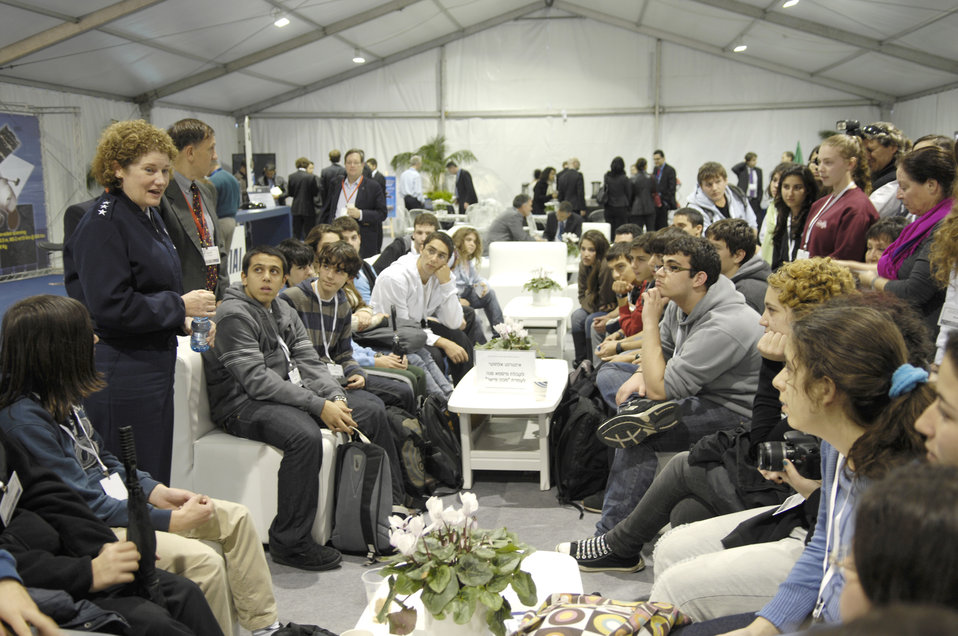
JFCC-Space commander highlights need for improved space situational awareness

Lt. Gen. Susan Helms speaks with students at the Sixth Annual Ilan Ramon International Space Conference in Tel-Aviv, Israel, Jan. 30, 2011. The students used this opportunity to ask the general questions about her assignment as an astronaut with NASA. During her two-day visit to Tel-Aviv, General Helms delivered a keynote speech at the conference and met with Israeli military leaders. General Helms is the commander of U.S. Strategic Command's Joint Functional Component Command for Space.